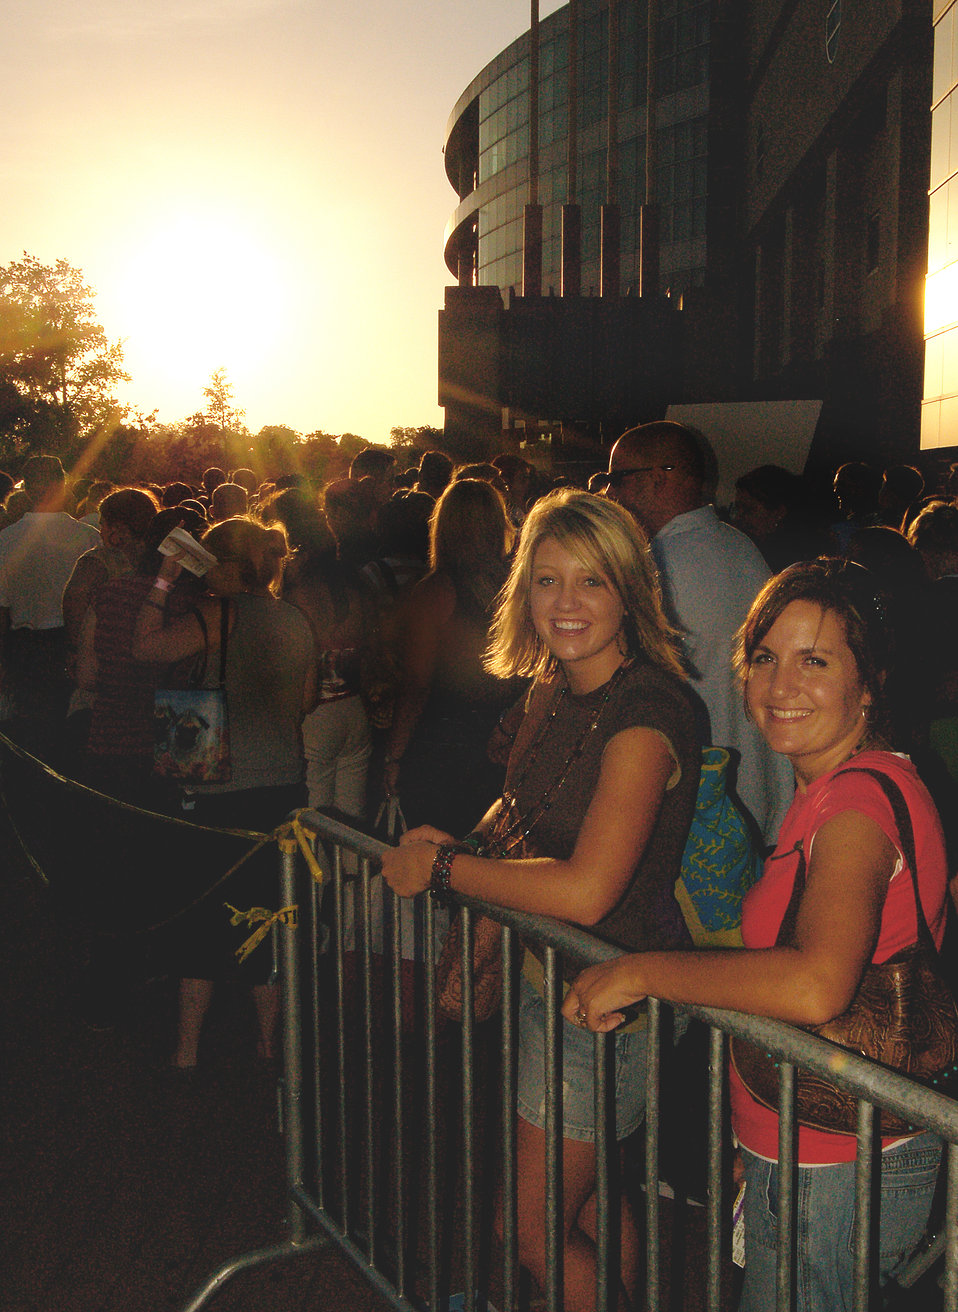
Two Alamo City Airmen vie for 'American Idol' spot

Hopefuls wait outside the Alamodome for their chance to audition for the FOX television show